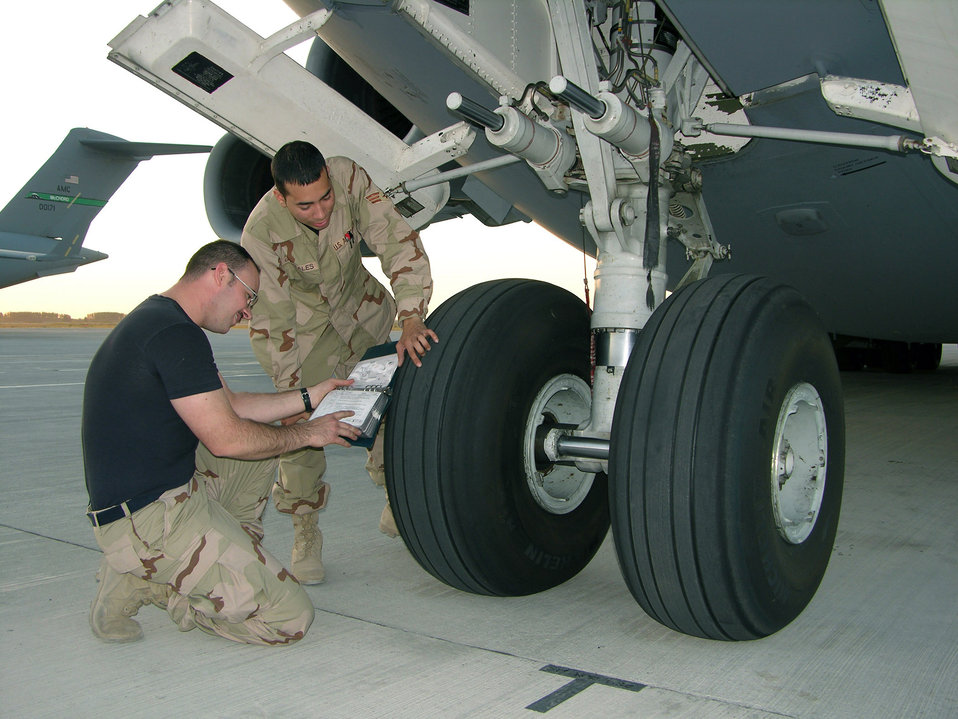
'Tire-ing' work

MANAS AIR BASE, Kyrgyz Republic -- Staff Sgt. Zach Pock (left) and Senior Airman Jose Gonzalez look for tire damage on a C-17 Globemaster III here. The crew chiefs were recently forward-deployed while the runway at Ramstein Air Base, Germany, was closed for repairs. Sergeant Pock is assigned to the 62nd Aircraft Maintenance Squadron at Charleston Air Force Base, S.C., and Airman Gonzalez is assigned to the 437th AMS at McChord AFB, Wash.